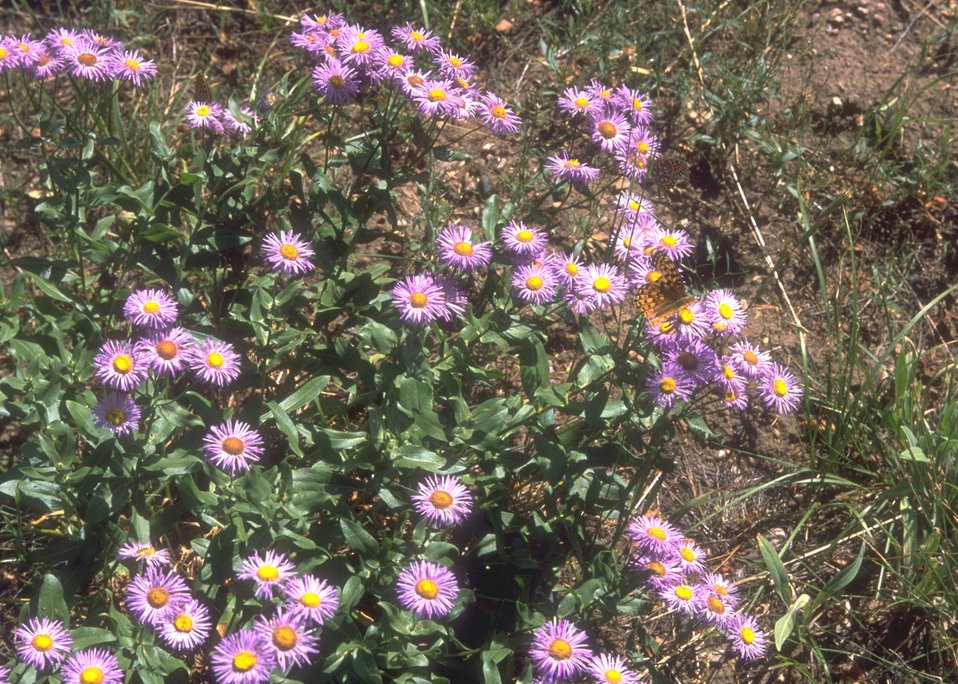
Flowers, Muddy Mountain Recreation Area, Casper Field Office.